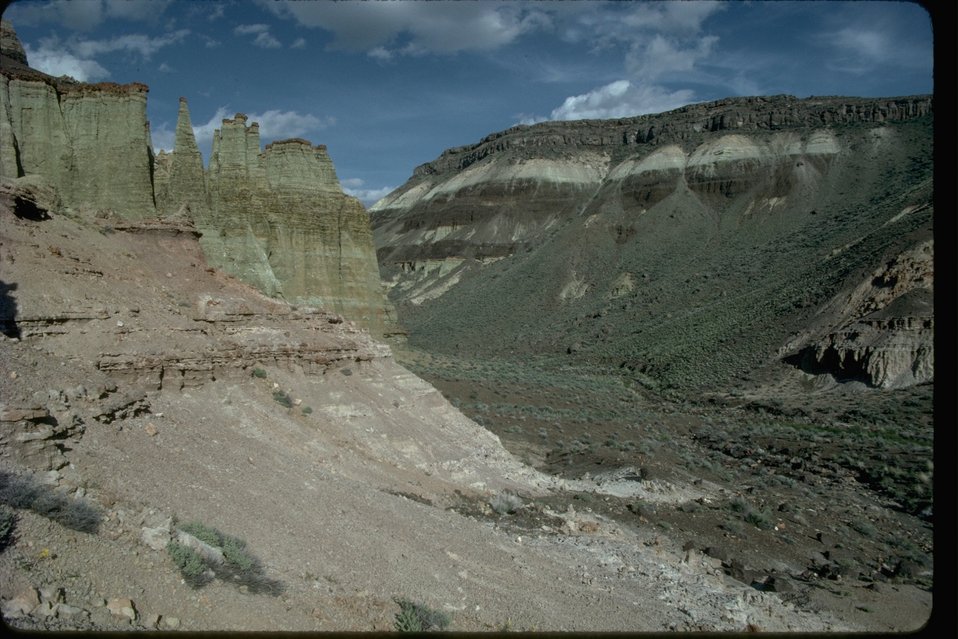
Large cliffs and rock formations in the Lower Owyhee Canyon Wilderness Study Area. OR 3-110.